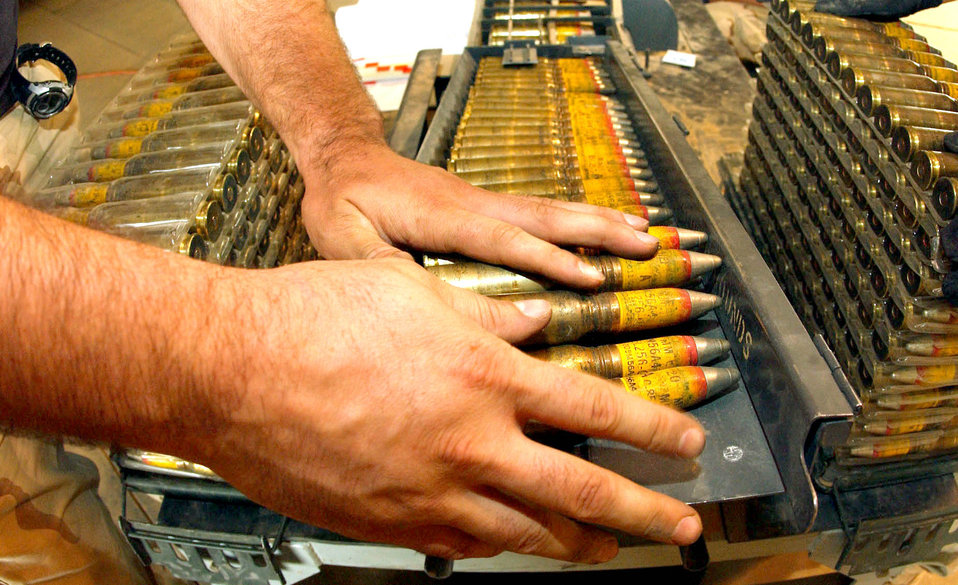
On target: Ammo Airmen do bang up job

BALAD AIR BASE, Iraq -- The 332nd Expeditionary Maintenance Squadron's munitions flight Airmen not only arm both of the F-16 Fighting Falcon squadrons here, but they also provide the Air Force ground troops with ammo.